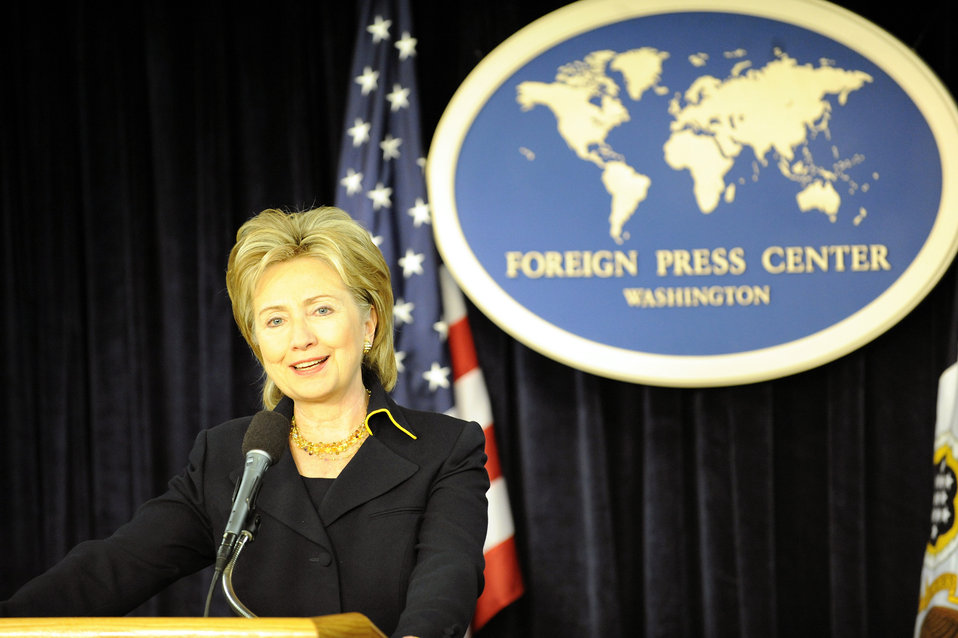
Secretary Clinton Marks Global Press Freedom Day at U.S. Foreign Press Center

U.S. Secretary of State Hillary Rodham Clinton briefs the press on U.S. commitment to global press freedom at the Foreign Press Center in Washington, DC May 19, 2009.